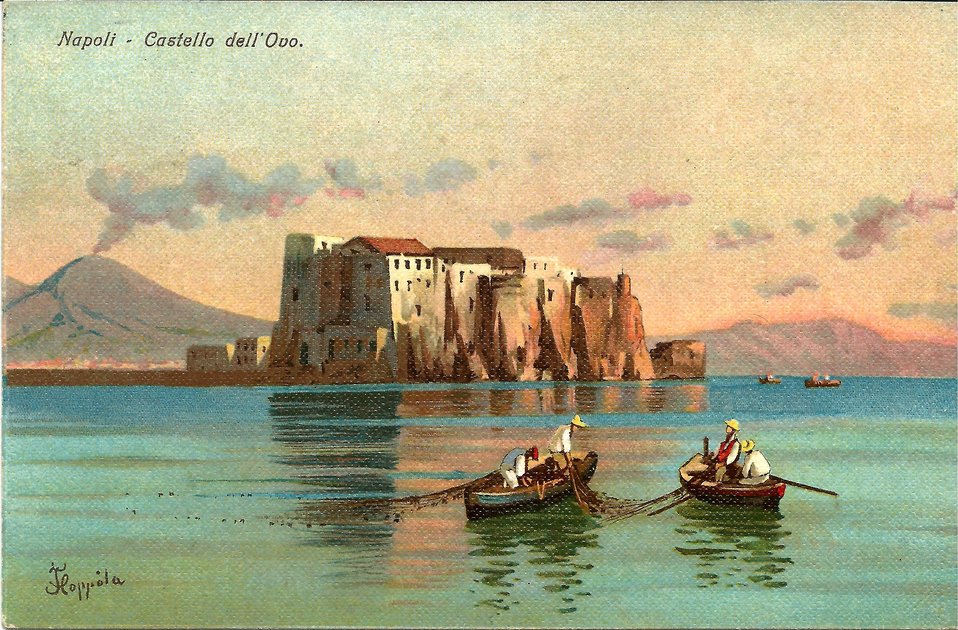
Nederlands: Postkaart van een schilderij van het kasteel dell'Ovo bij Napels